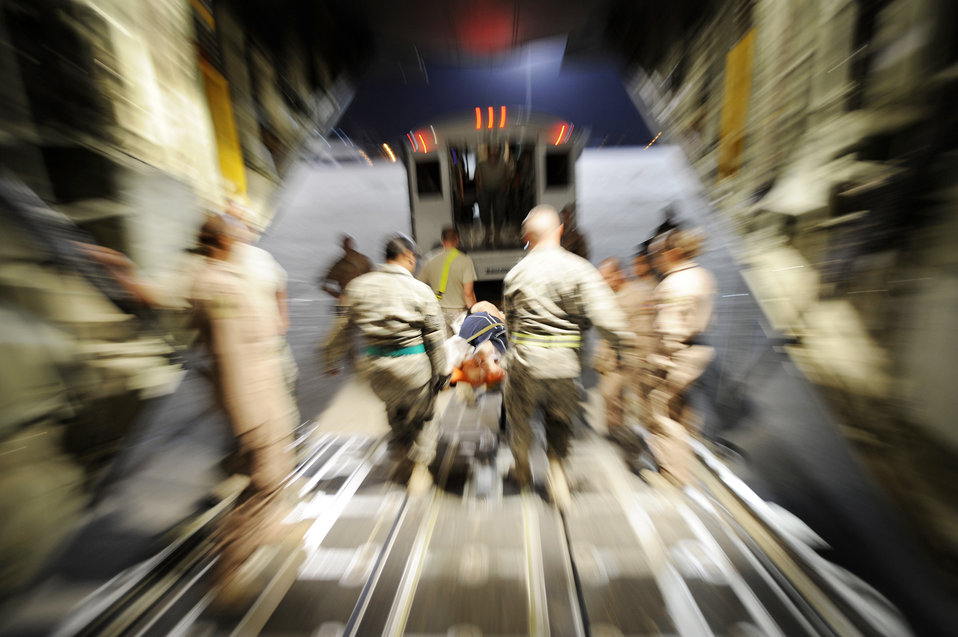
Flying hospital staff gives wounded fighting chance

Airmen assigned to the 451st Expeditionary Aeromedical Evacuation Flight transport patients from a C-130J Super Hercules to an ambulance during an aeromedical evacuation mission to transport patients July 21 at Kandahar Airfield, Afghanistan.